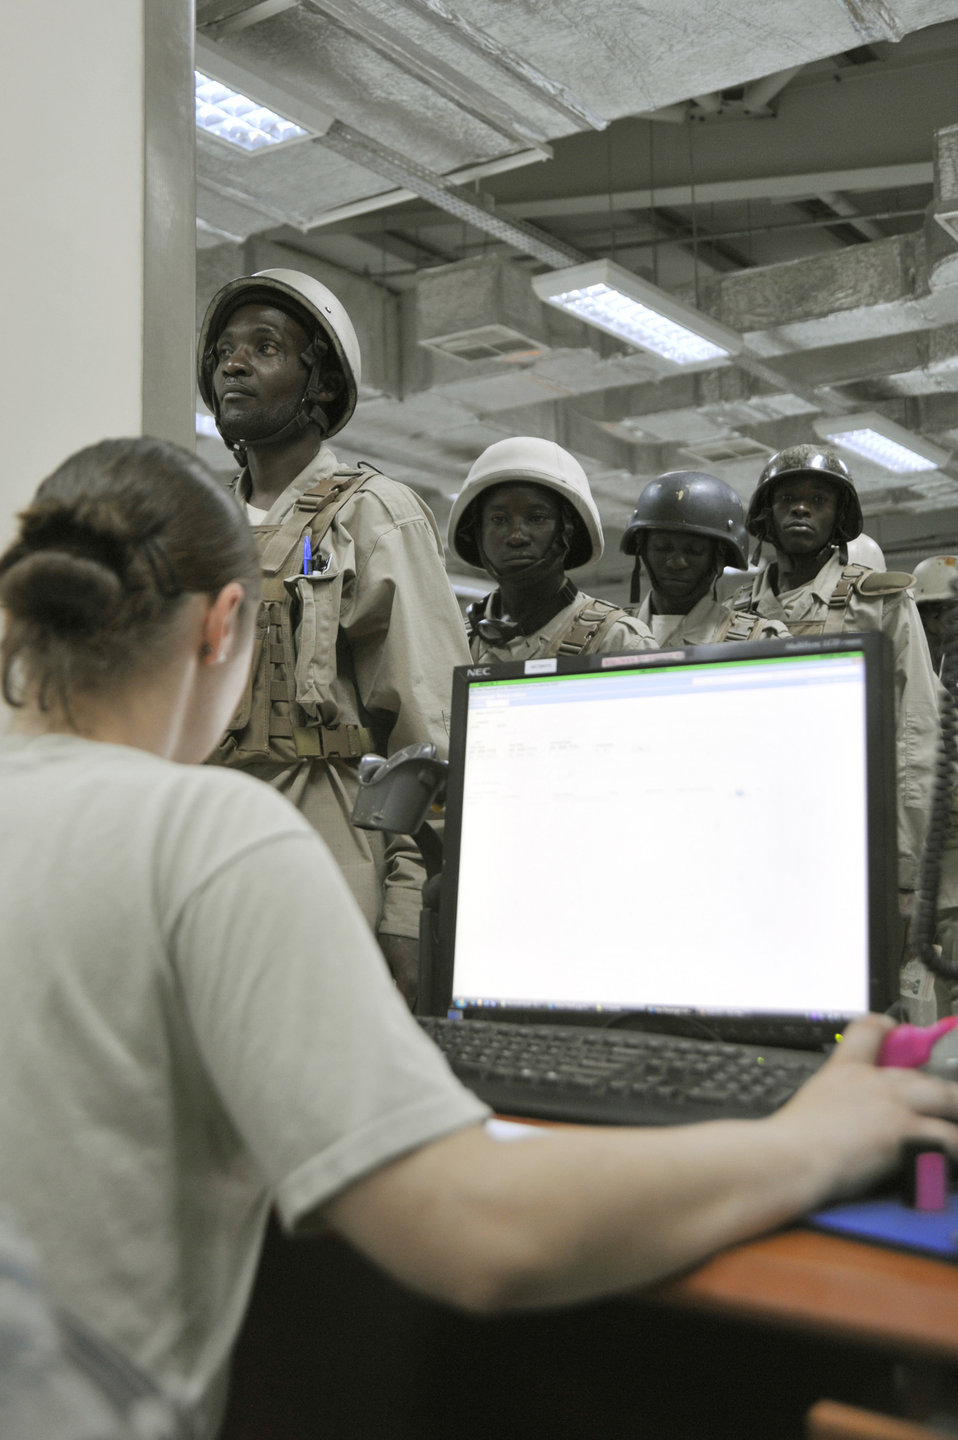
Teamwork keeps Sather Air Base's passenger terminal moving

Senior Airman Cassandra Delisle ensures passengers are manifested on a flight Aug. 6, 2010, at Sather Air Base, Iraq. Airmen from the 447th Expeditionary logistics Readiness Squadron ensure normal people and cargo movements while simultaneously supporting the drawdown of forces in Iraq. Airman Delisle is a 447th Expeditionary logistics Readiness Squadron passenger service representative.